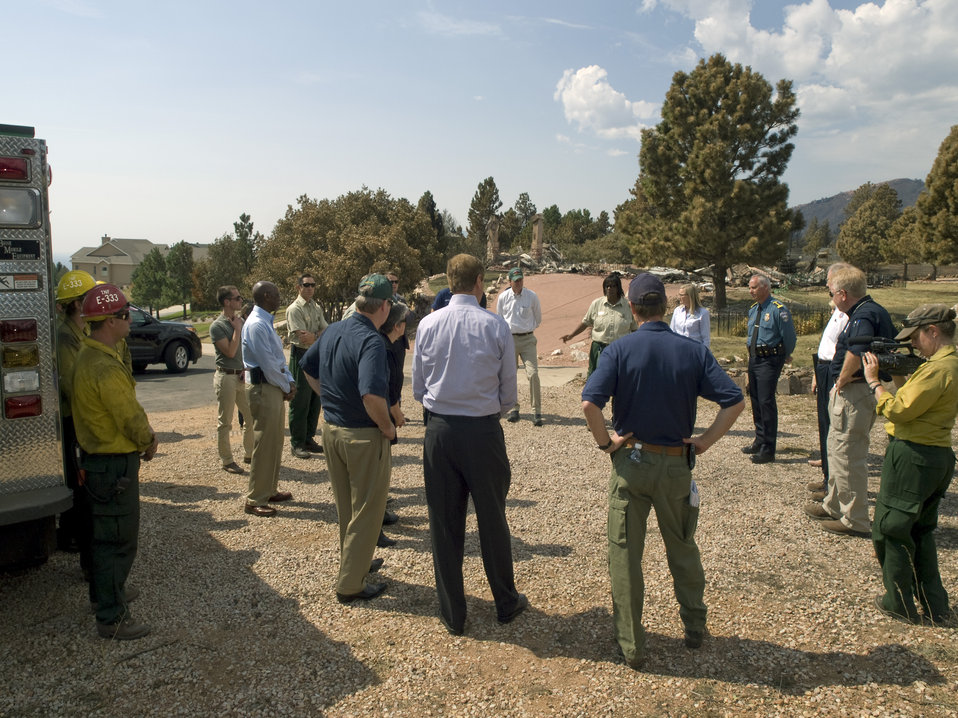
Agriculture Secretary Tom Vilsack and Homeland Security Secretary Janet Napolitano receive a briefing from firefighters at the Waldo Canyon Fire near Colorado Springs, CO on Tuesday, July 3, 2012.